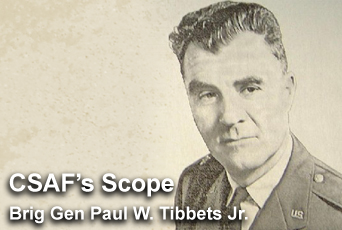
CSAF's Scope

The CSAF's Scope focuses on current topics the Air Force chief of staff feels are of special importance to today's Airmen.